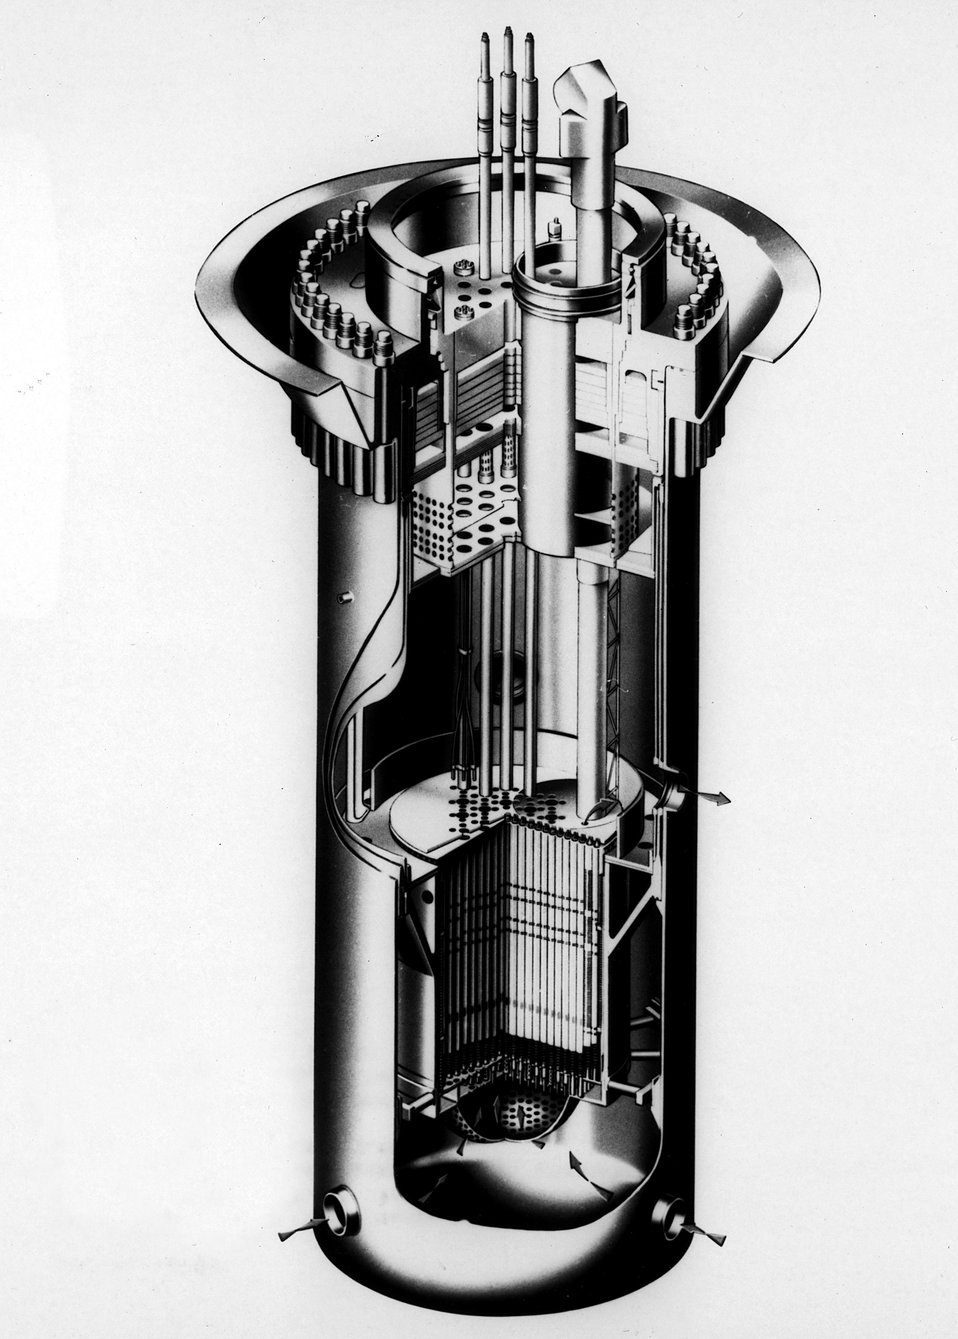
Artist's conception of interior of the Liquid Metal Fast Breeder Reactor. The LMFBR Demonstration Plant will be located near Oak Ridge, Tennessee. c. 1974